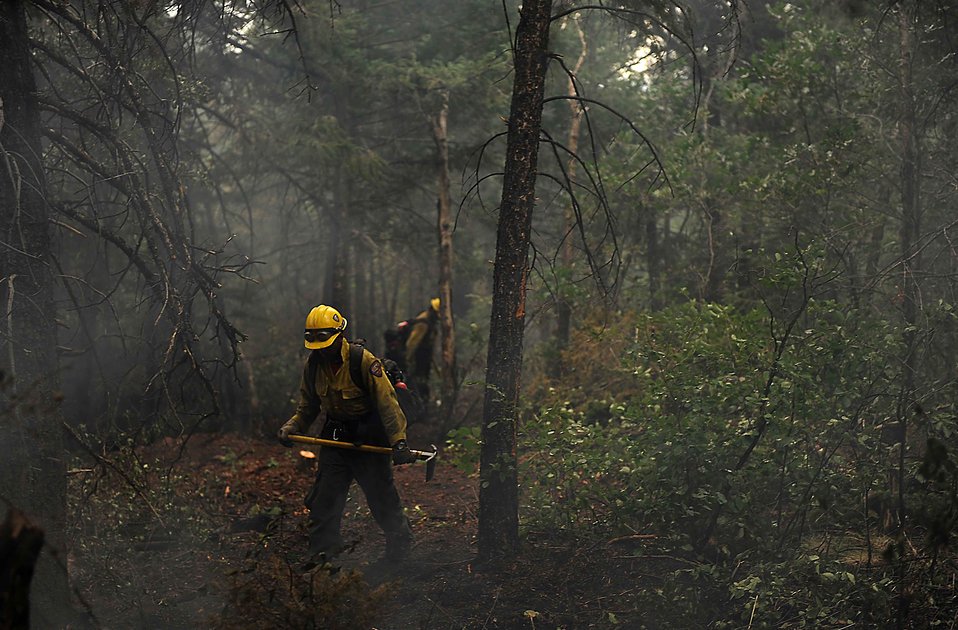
Fighting fires

Lupe Covarrubias cuts a fire line in the Mount Saint Francois area of Colorado Springs, Colo., while helping to battle several fires in Waldo Canyon on June 28, 2012. The Waldo Canyon fire has grown to 18,500 acres and burned more than 300 homes. Covarrubias is a firefighter with the Vandenberg Air Force Base, Calif., Hot Shots.